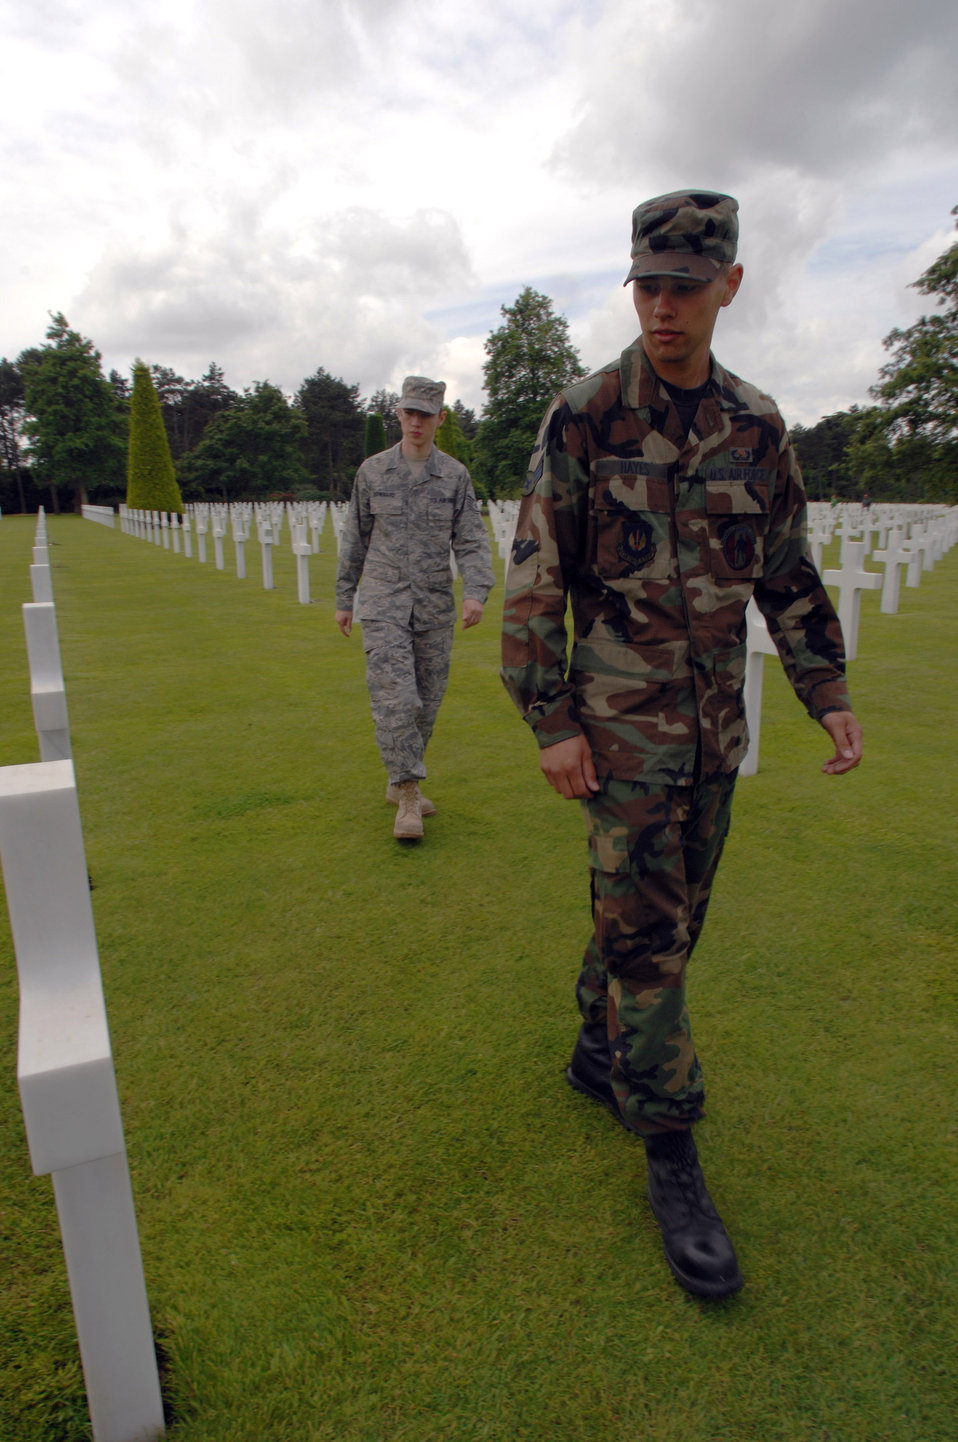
Remembering D-Day

Staff Sgt. Jacob Dowrard (left) and Airman 1st Class Mark Hayes walk through the Normandy American Cemetery and Memorial June 5 in Saint Larent-sur-Mer, France. The grounds hold the remains of more than 10,000 American servicemen and women, and are situated on the bluffs above Omaha Beach. Sergeant Dowrard is an integrated aviation specialist and Airman Hayes is a crew chief, both from the 86th Aircraft Maintenance Squadron at Ramstein Air Base, Germany